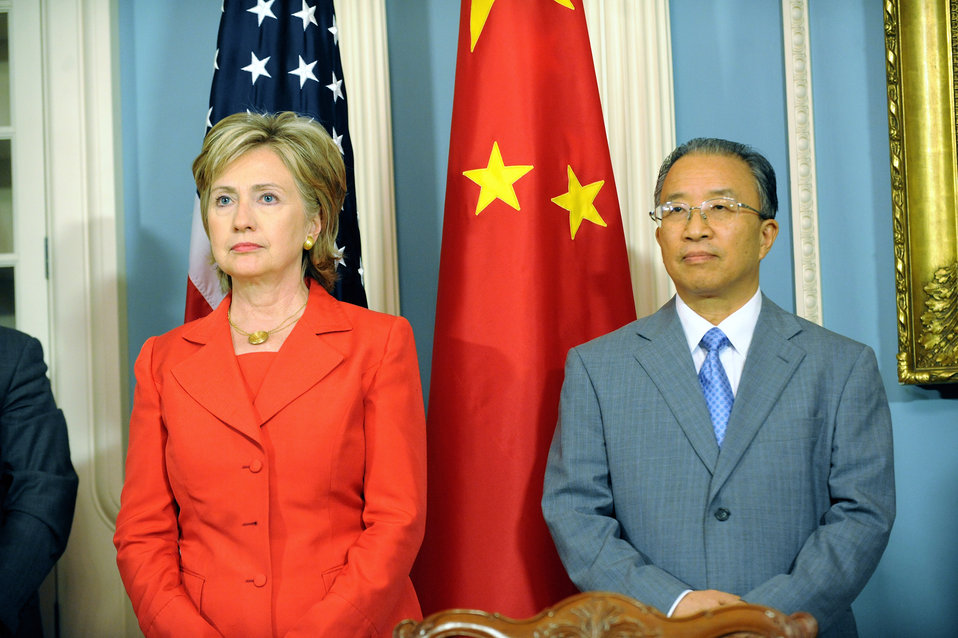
U.S.-China Strategic and Economic Dialogue

U.S. Secretary of State Hillary Rodham Clinton during the Memorandum of Understanding (MOU) signing in Treaty Room of the U.S. Department of State in Washington, DC July 28, 2009.